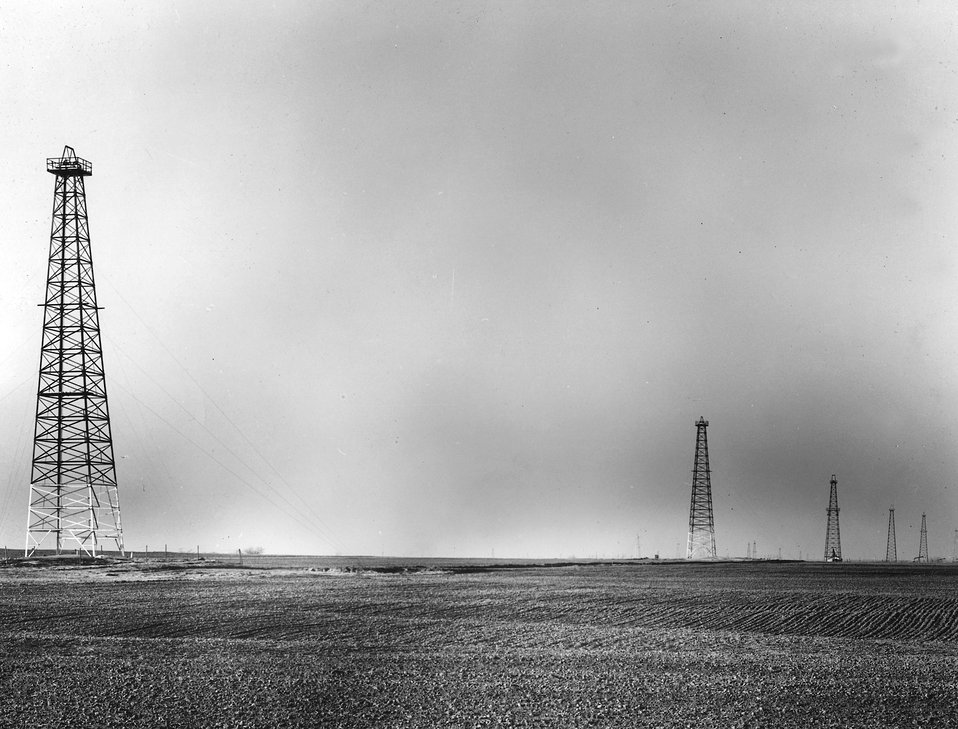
West Edmond, Oklahoma. Standard Oil wells drilled on a forty-acre spacing plan. c. undated